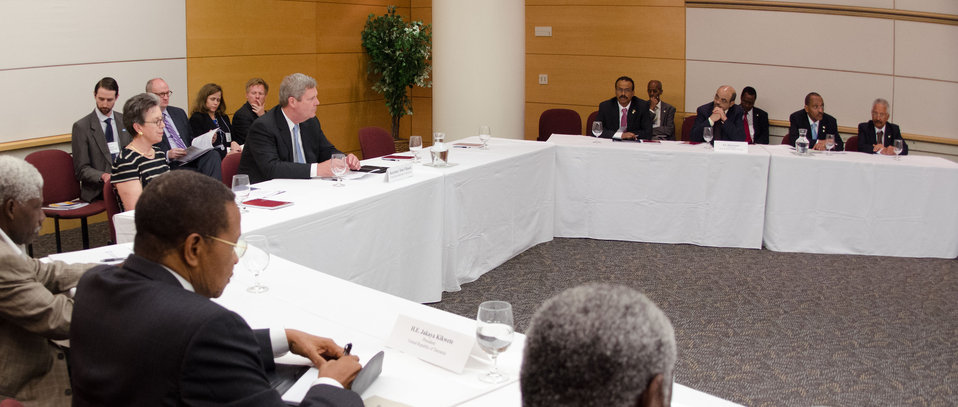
Agriculture Secretary Tom Vilsack responds to statements from each of the heads of state at the African Heads of State conference held at the Ronald Reagan Federal Building in Washington, D.C., on Friday, May 18, 2012.